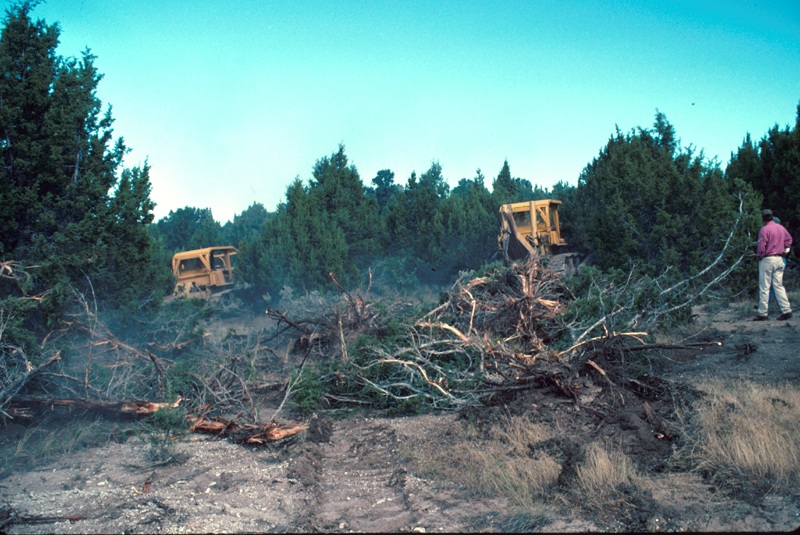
LSRD Range Restoration Project Lower Snake River District